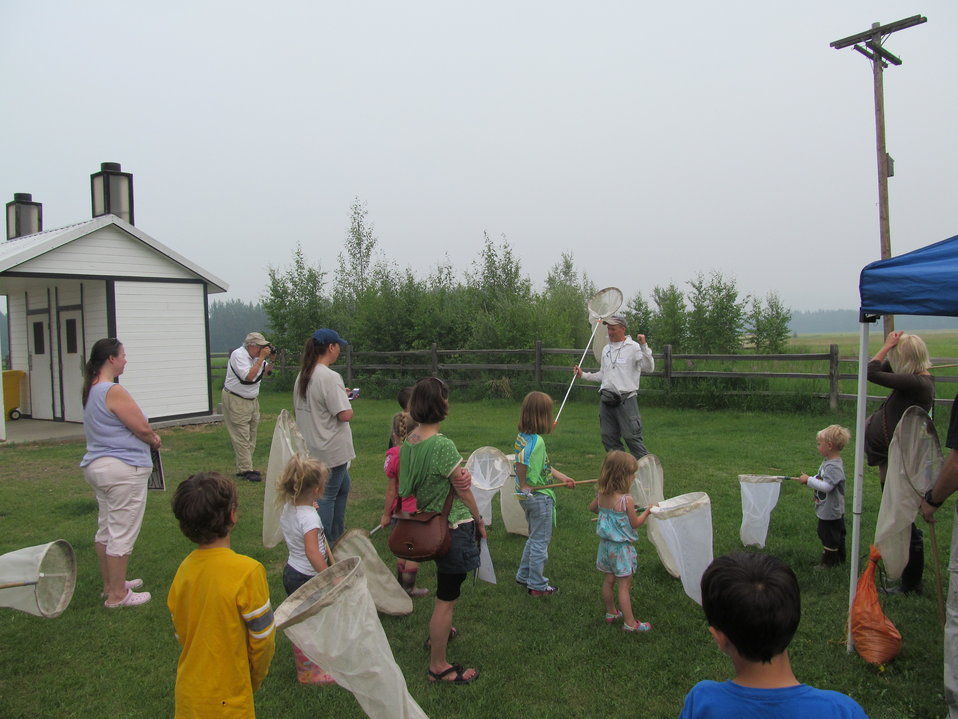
Co-author of the book Dragonflies of Alaska, John Hudson leads nature walks for the general public

(USFWS)